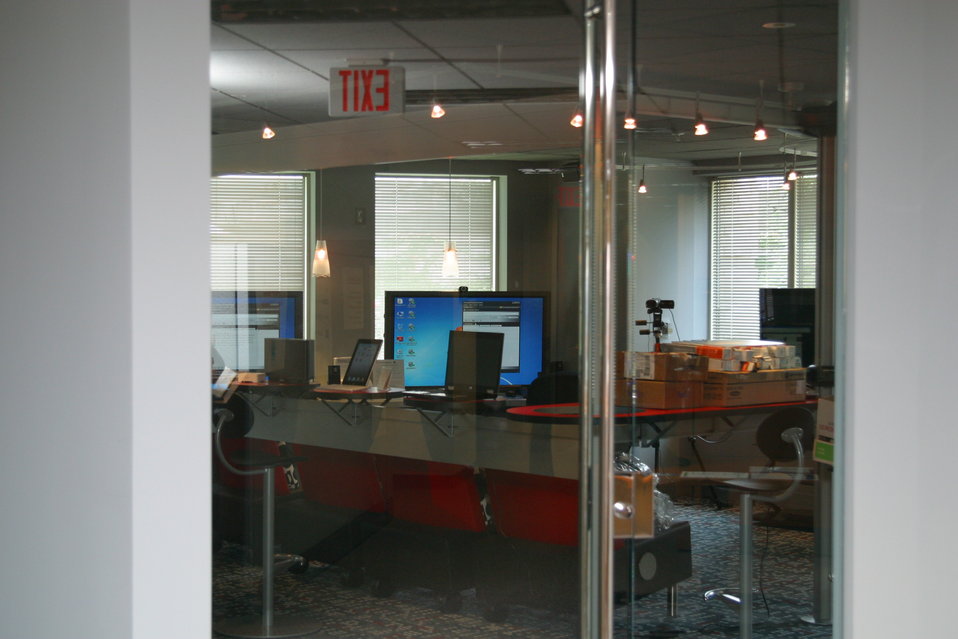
TEC Center

Debuting the FCC TEC Center on Wednesday July 13, 2011